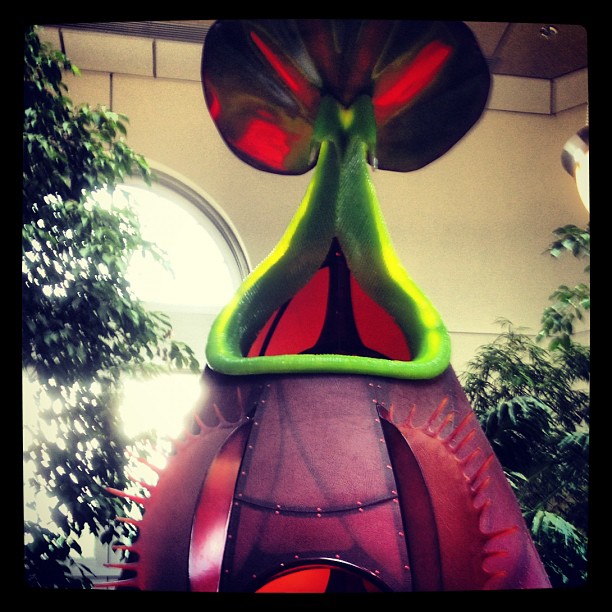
Tough Monday? Sometimes you're the pitcher plant, sometimes the bug. Savage Gardens final 2 wks @ USBG.